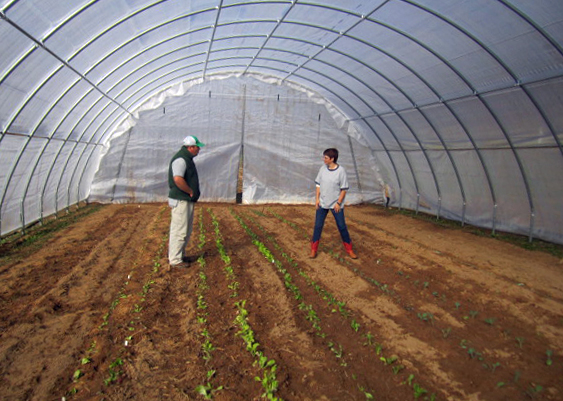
High tunnel hughes mahala a

U.S. Department of Agriculture (USDA) Natural Resource Conservation Service (NRCS) Jackson County Tennessee District Conservationist Jason Hughes talks with landowner Janet Mahala about her recently constructed high tunnel. Seasonal high tunnels, or hoop houses, are made of plastic or metal pipe and covered with sheeting, typically made of plastic. High tunnels are easy to build, maintain, move, and provide an energy-efficient way to extend the growing season and provide fresh food for local communities. USDA NRCS offers seasonal high tunnels nationwide under the Environmental Quality Incentives Program (EQIP).